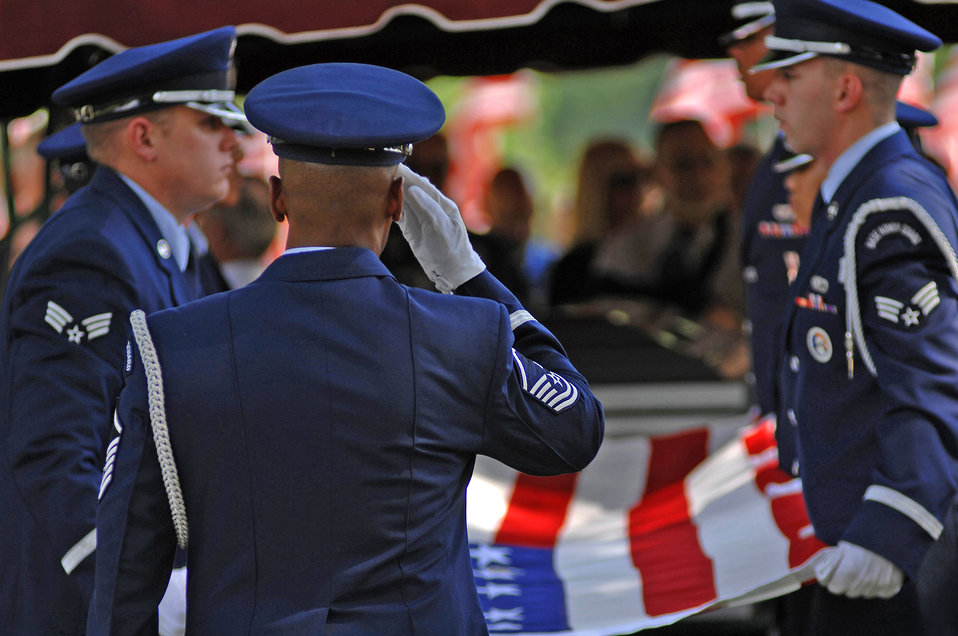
Airmen honor the fallen

Master Sgt. Gregory Giles renders a salute as the rest of the honor guard folds the American flag for presentation to the father of Chief Master Sgt. Quincy Adam July 27, 2009, at Chapel Hill Memorial Cemetery in Chapel Hill, N.C. Chief Adam's remains were discovered in Southeast Asia after being declared